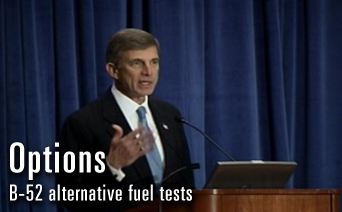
B-52 successfully tests alternative jet engine fuel

Undersecretary of the Air Force Dr. Ronald M. Sega talks about the first use of an alternative fuel used on a B-52 Stratofortress flown Sept. 19 out of Edwards Air Force Base, Calif. Dr. Sega was a crewmember on the mission.